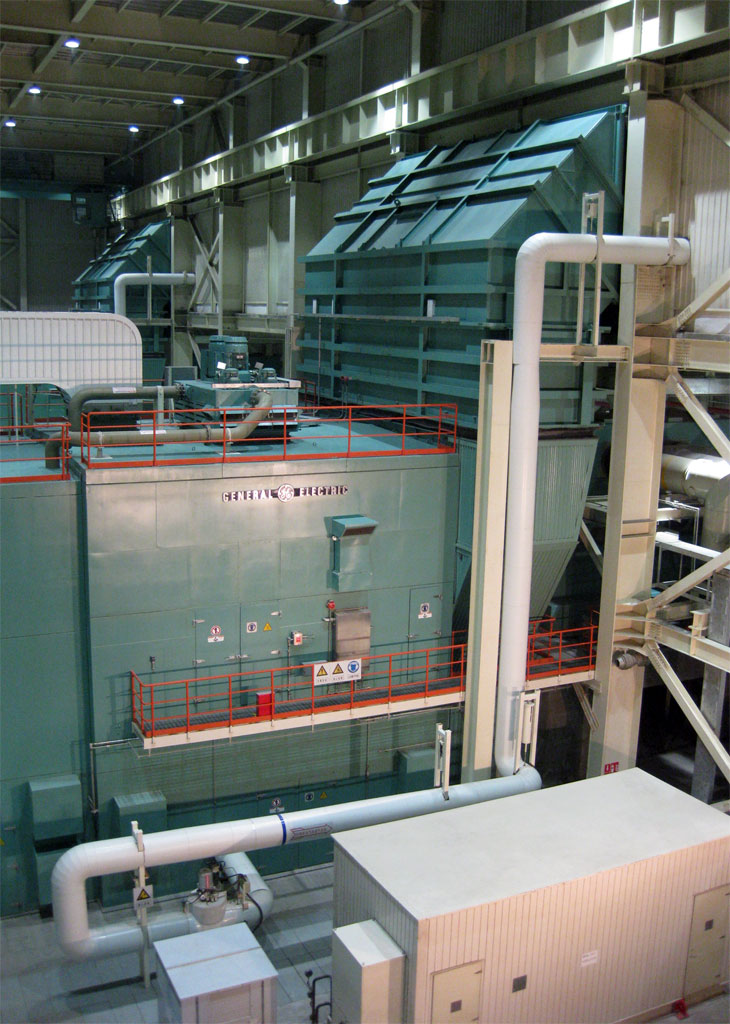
Taiyanggong Gas-Fired Plant

Behind the Scenes: Taiyanggong Gas-Fired Plant in China prior to U.S. Secretary of State Hillary Rodham Clinton's visit February 21, 2009.